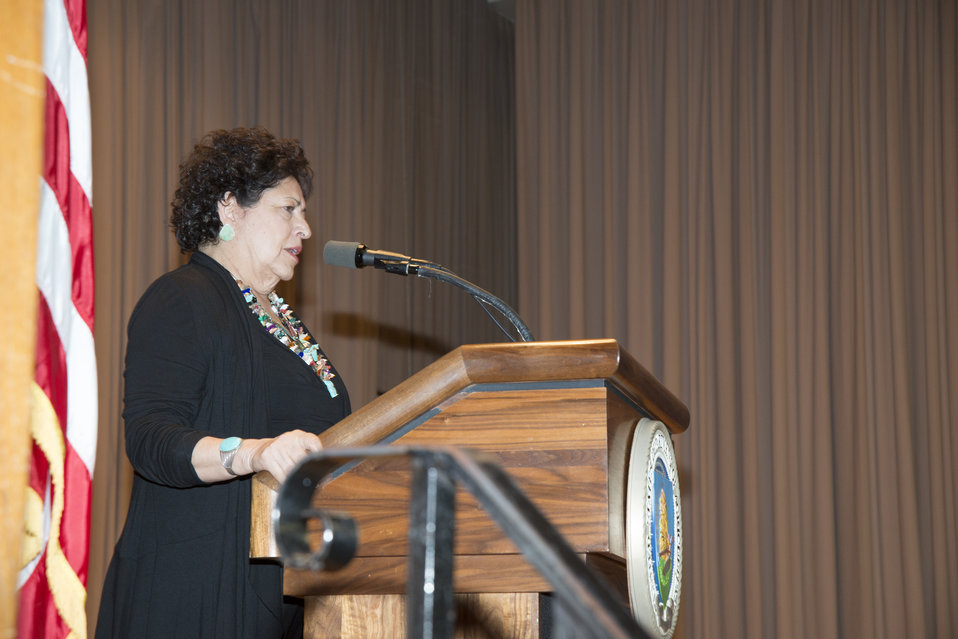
U.S. Office of Personnel (OPM) Director Katherine Archuleta speaks at the U.S. Department of Agriculture’s (USDA) Women’s History Month Observance in the Jefferson Auditorium at USDA on Thursday, Mar. 13, 2014. The theme for this year’s observance is “Celebrating Women of Character, Courage, and Commitment”.